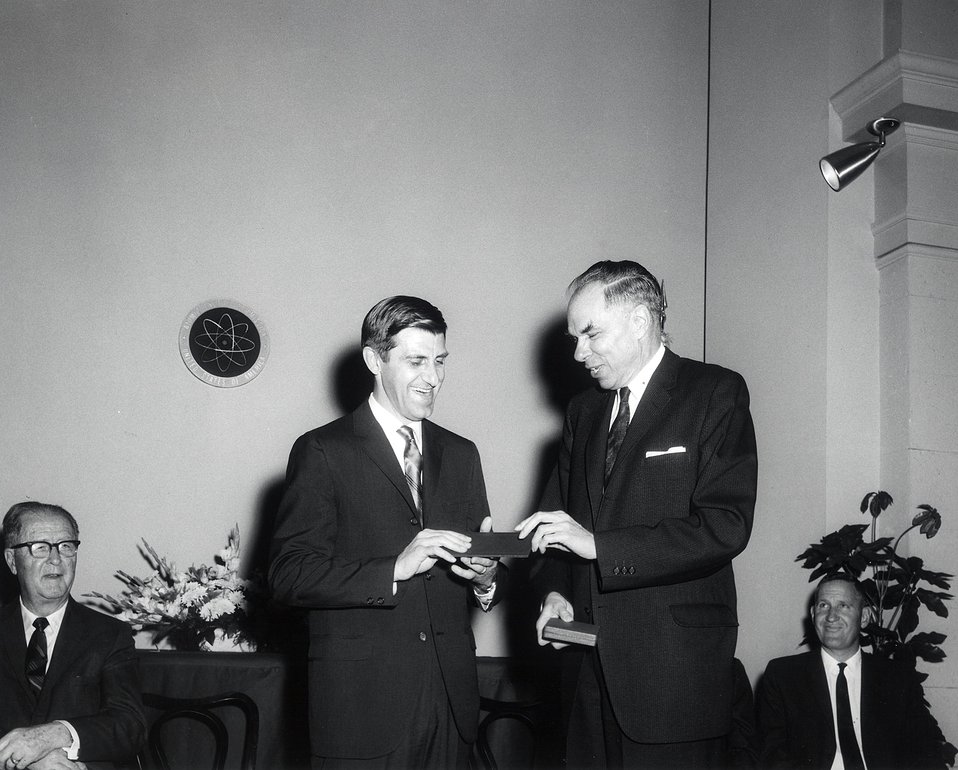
7th E.O. Lawrence Award Ceremony, April 27, 1966, Wash., D.C. L-R: Senator Anderson, Dr. Huizenga, Chairman Seaborg, Dr. Agnew.